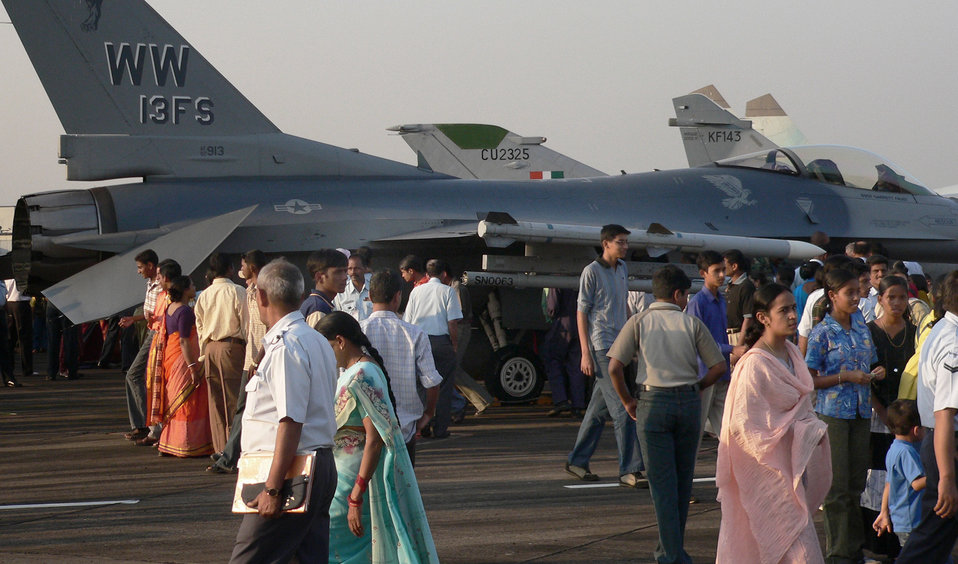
Cope India

KALAIKUNDA AIR STATION, India (AFPN) -- Civilians flock to the flightline to see displays of U.S. and Indian Air Force aircraft. About 250 U.S. Airmen from five bases are participating in the Cope India exercise. The exercise provides an opportunity for the two air forces to enhance their ability to operate together.